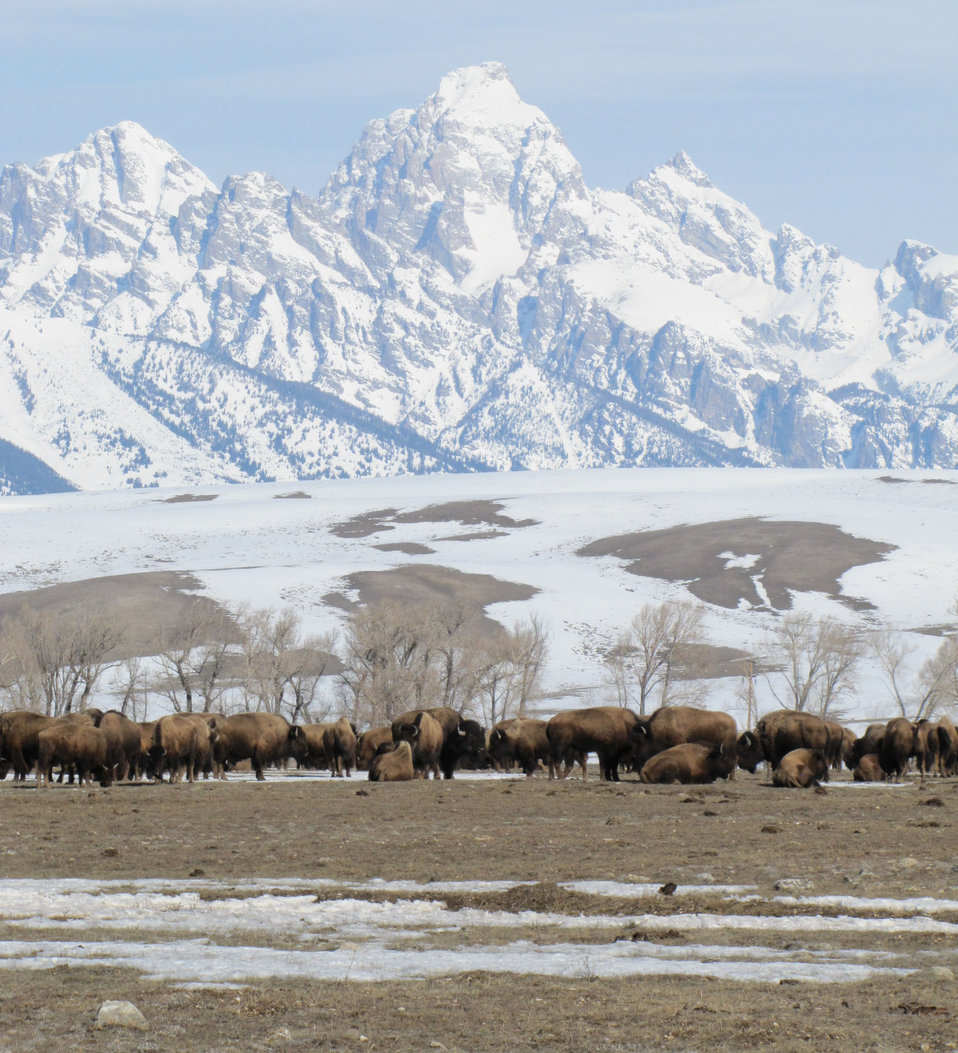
Sunday Morning in Spring

A group of bison are oblivious to the stunning scenery behind them on a Spring morning at the National Elk Refuge.